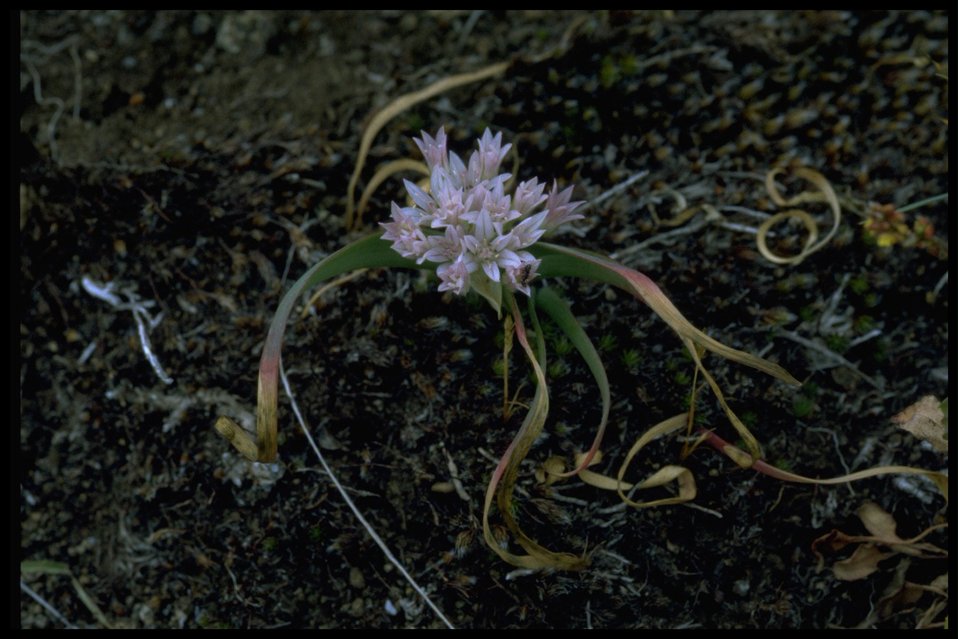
Medium shot of wildflower (genus Allium).